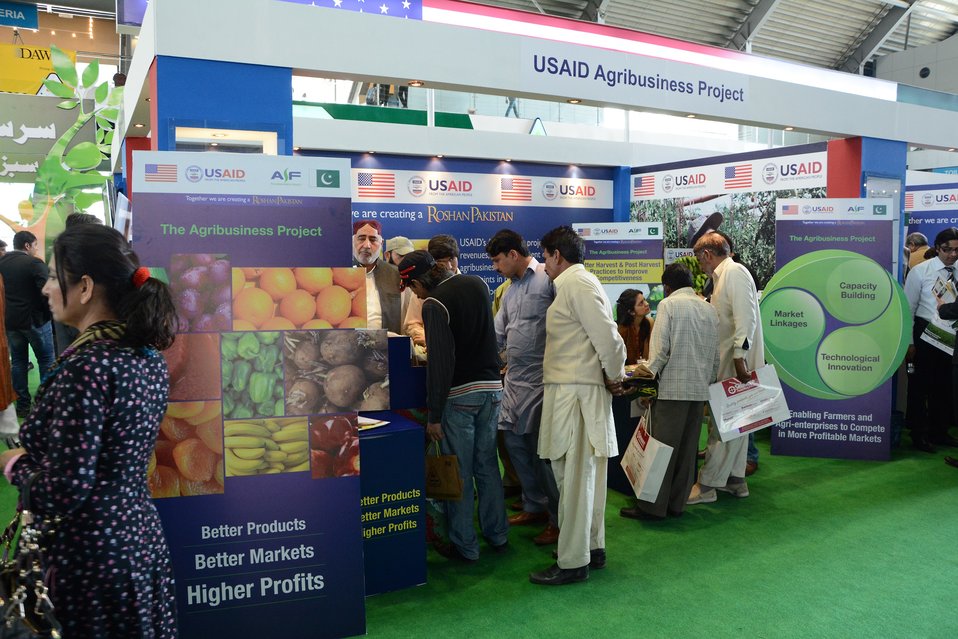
TAP3